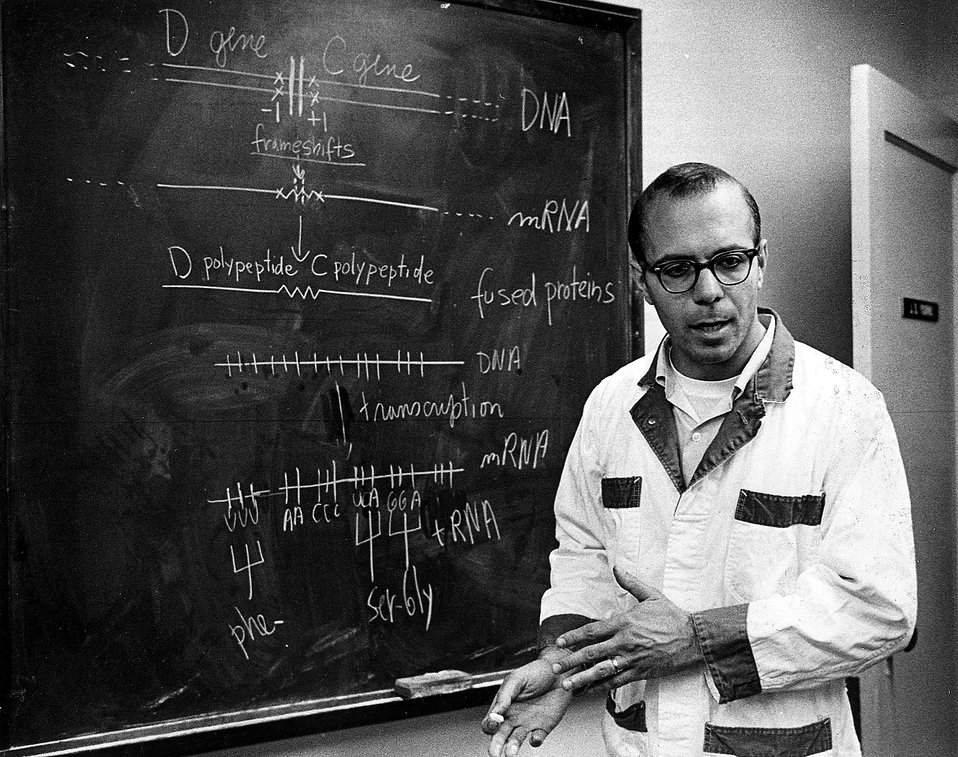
Existence of four letter words in the genetic code that controls the makeup and amount of all proteins, ultimately affecting the cell's ability to divide, was first demonstrated conclusively by Dr. Yourno and his colleagues.
c.1973